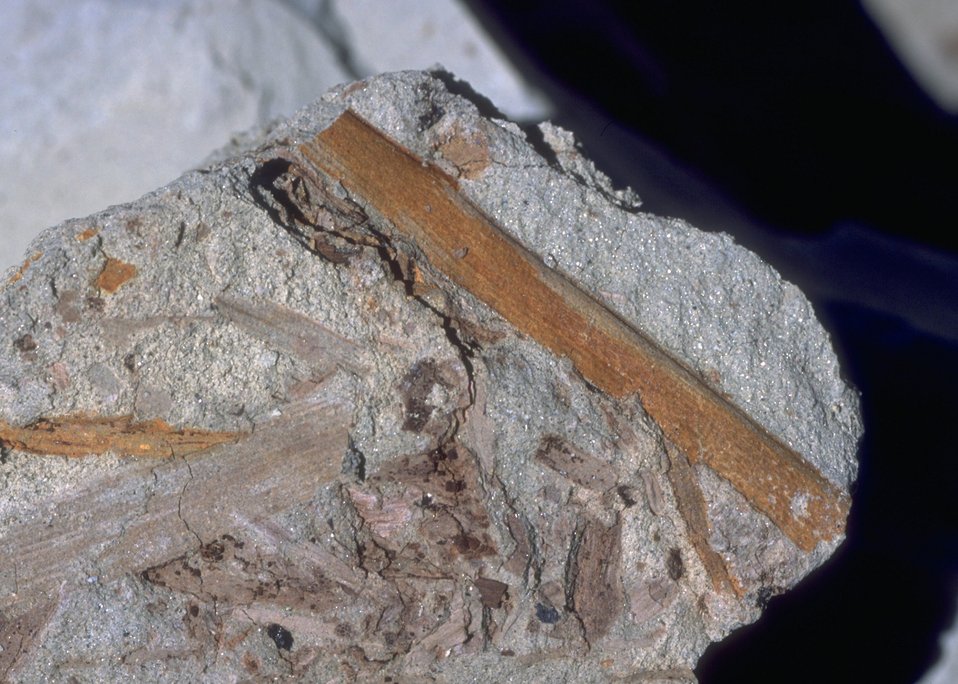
Close up of fossil vegetation, Cedar Ridge Paleo area, Worland Field Office.